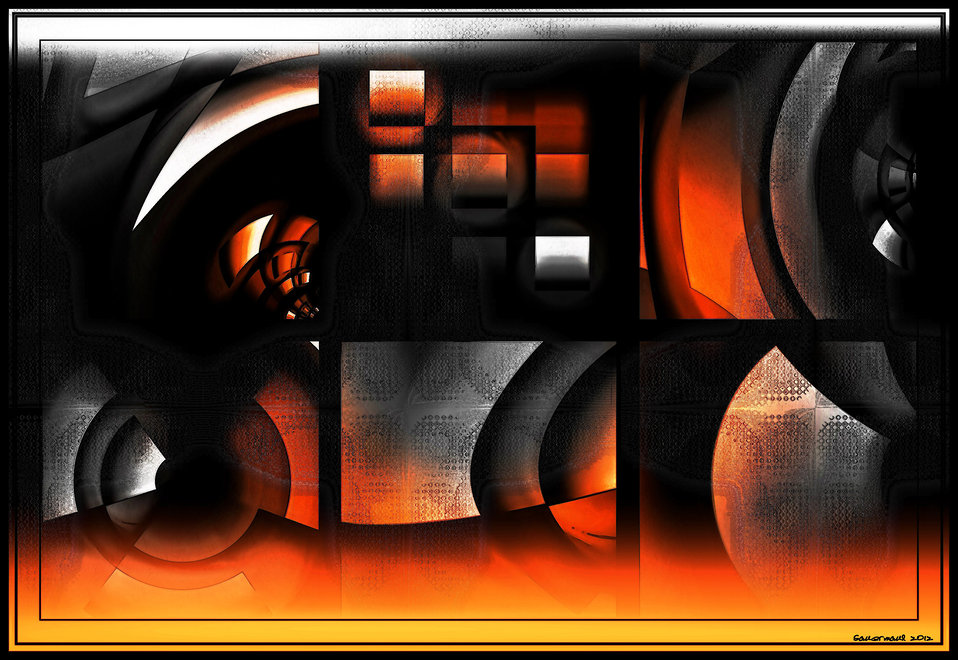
Elements in orange

Background.